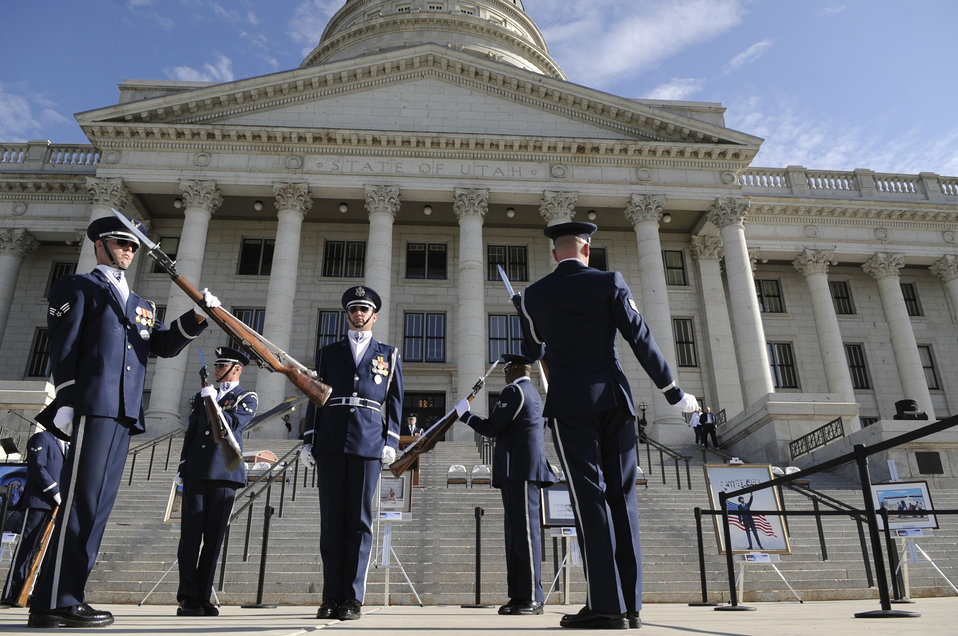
Precision performance

Air Force Honor Guard drill team members perform before the proclamation ceremony for Air Force Week-Salt Lake City June 1 in Utah. The ceremony included performances by the U.S. Air Force Academy Band, and a four-ship flyover the capitol building.